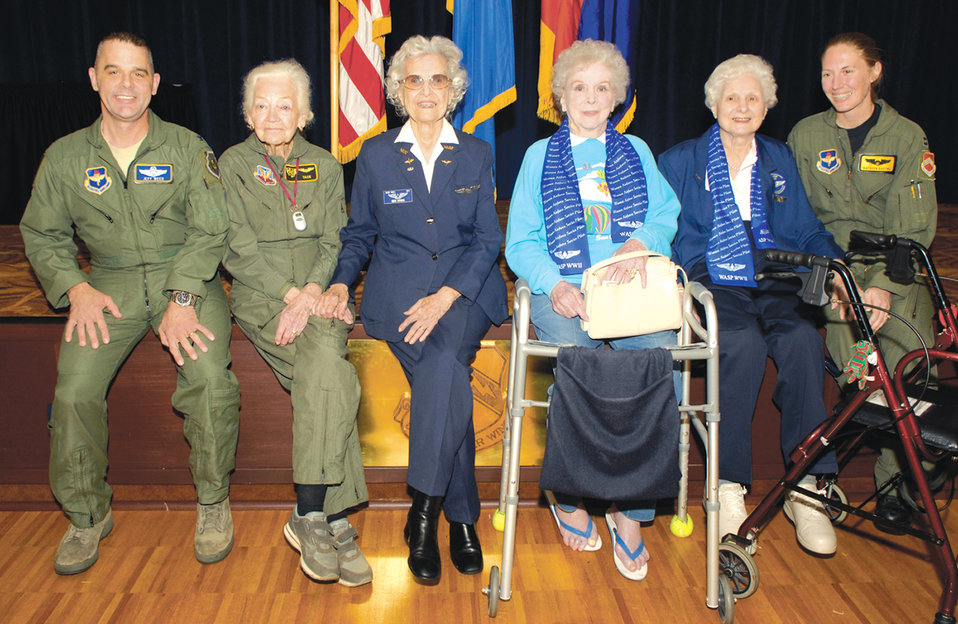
WASP celebrate Women's History Month

Col. Jeff Weed (left), and Capt. Kathryn Gaetke pose for photographs with members of the Women Airforce Service Pilots March 4, 2010 after the Women's History Month Observance luncheon at Luke Air Force Base, Ariz. Colonel Weed is the 56th Fighter Wing vice commander. Captain Gaetke is a 61st Fighter Squadron instructor pilot.